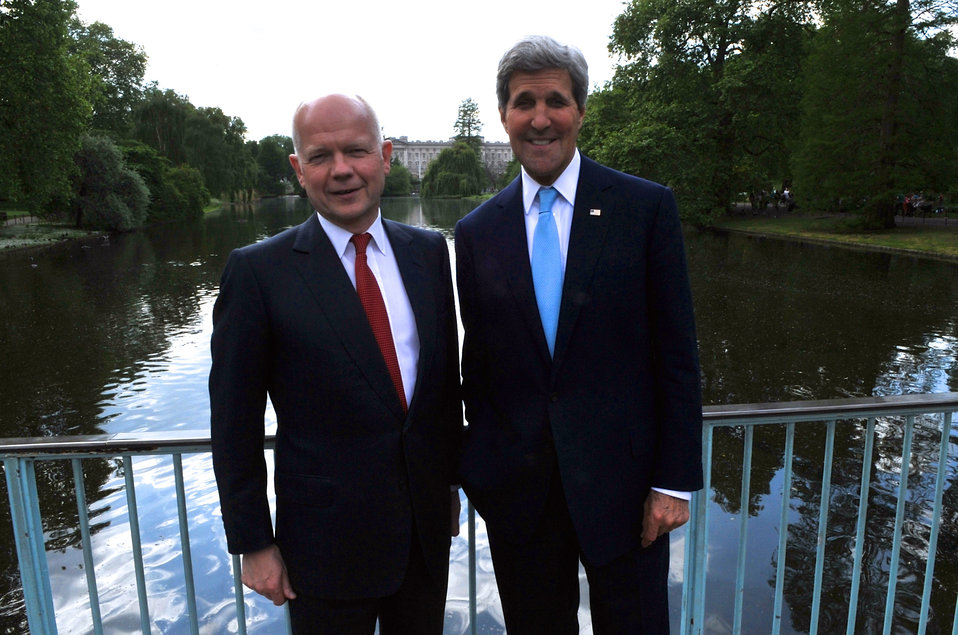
Secretaries Hague, Kerry Pose Against Buckingham Palace During Walk in London

British Foreign Secretary William Hague and U.S. Secretary of State John Kerry pose with Buckingham Palace in the background as they take a walk through St. James Park after a series of ministerial meetings in London on May 15, 2014.